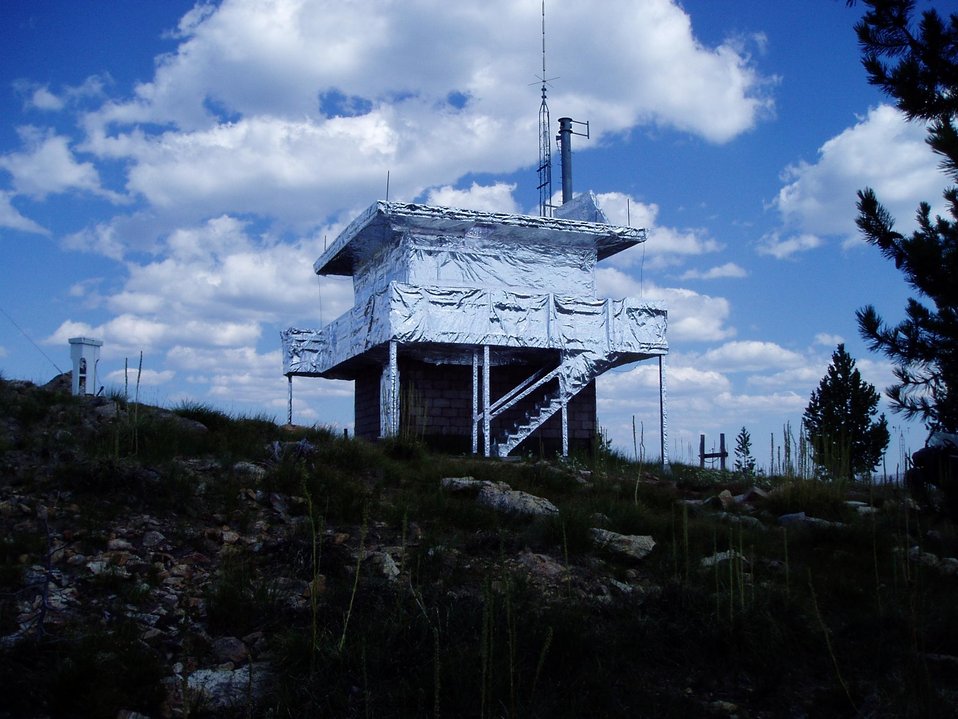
Structure protection has been applied to the Hells Half Acre Lookout in the Bitterroot National Forest near Conner, MT. The building is wrapped with heat resistance material to protect it from the Gold Pan Fire. The fire is directly west of the Lookout and threatens the structure if it makes an upslope run to the east. The Gold Pan Fire in the Bitterroot National Forest near Conner, MT began by lightning on Jul. 16, 2013 by lighting have consumed approximately 16,412 acres.